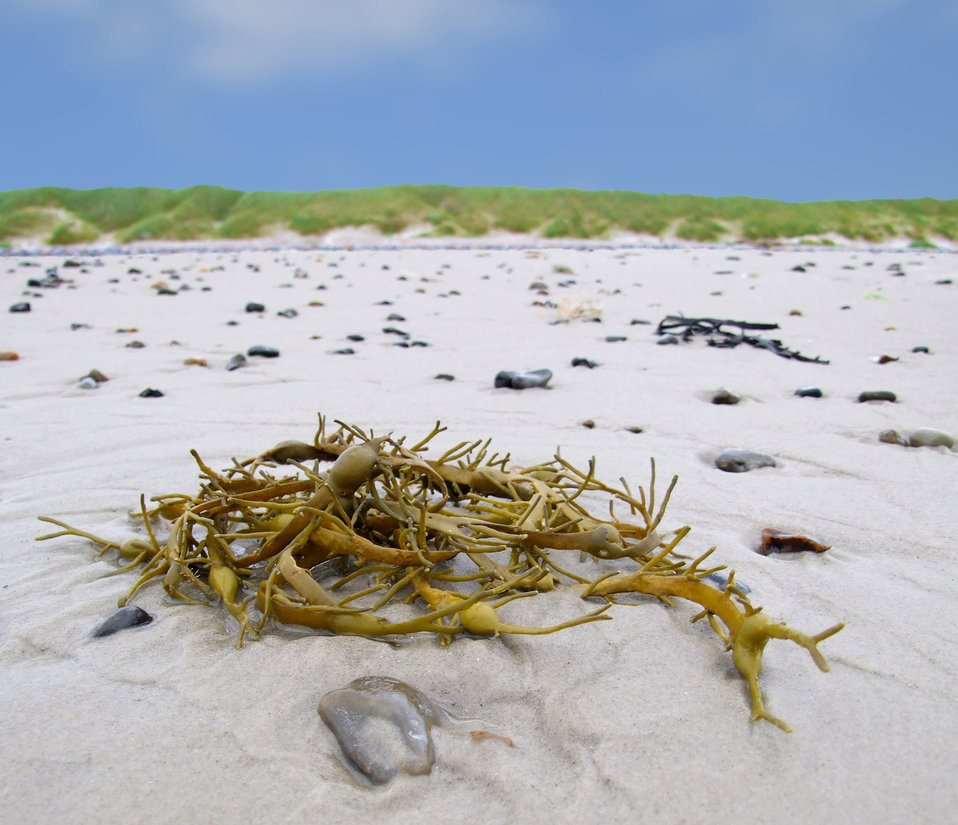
Seaweed on beach.